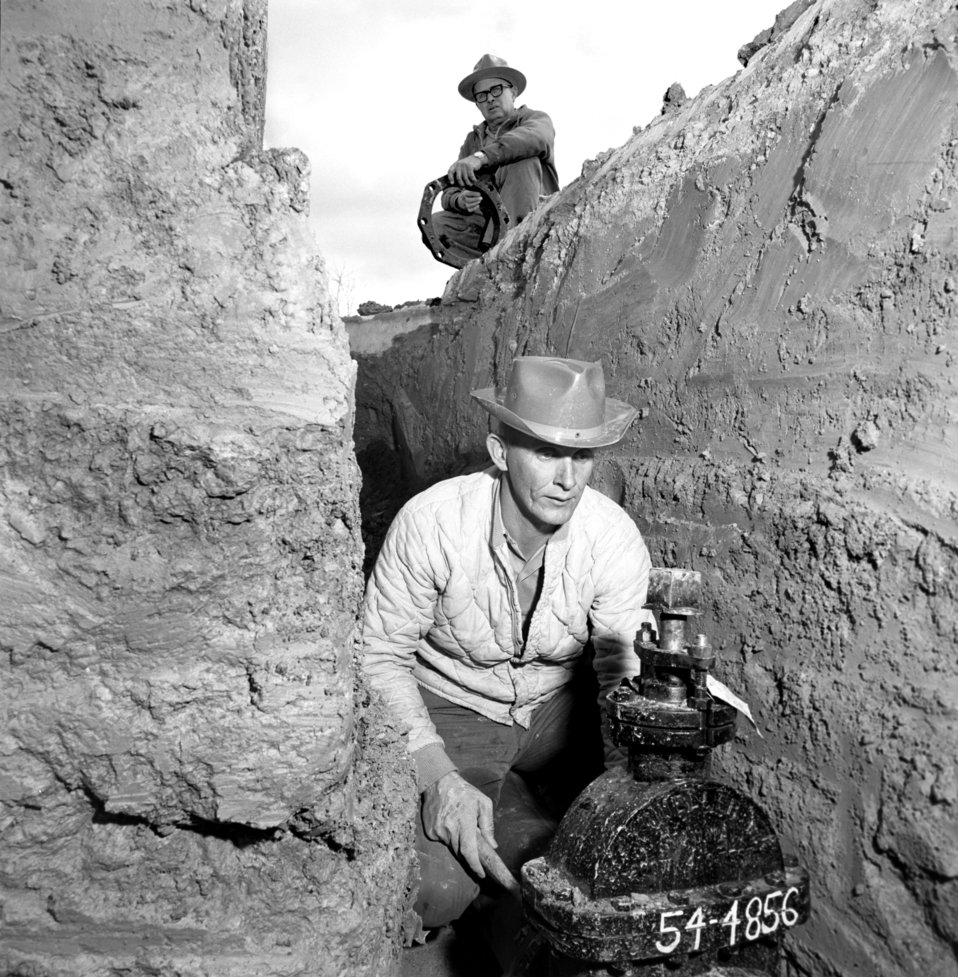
City of Oak Ridge at Work 1968

68-579a DOE photo Frank Hoffman 11-25-1968 Oak Ridge Tennessee